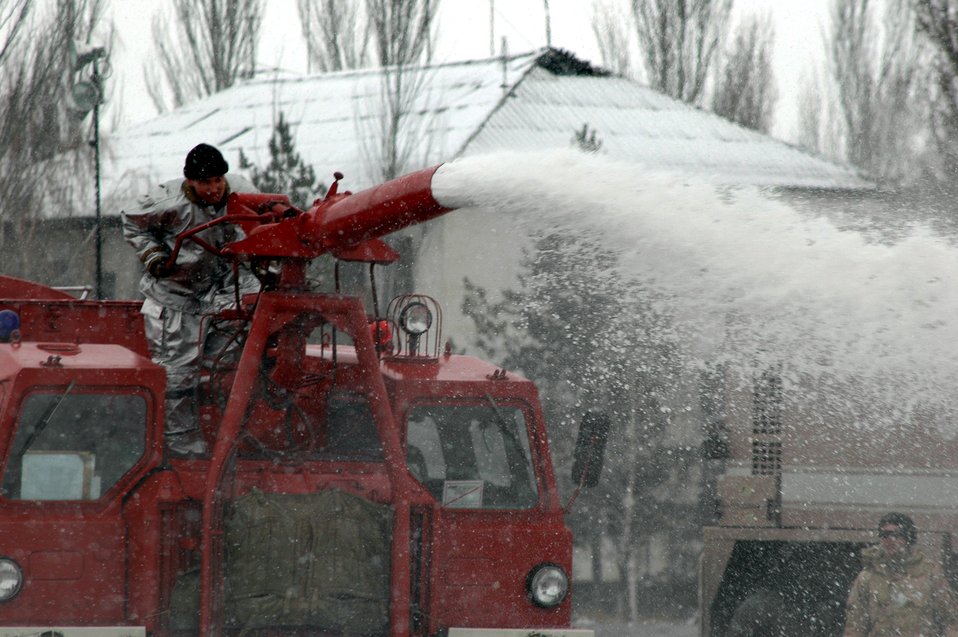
Manas Airmen train with Kyrgyz firefighters

Manas International Airport firefighter Stas Suleymanov demonstrates to Airmen the use of the Kyrgyz firetruck water canon using water pumped from a 376th Air Expeditionary Wing fire truck Feb. 25 at the airport in Kyrgyzstan. The 376th AEW fire department routinely trains with their MIA and other Kyrgyz counterparts.